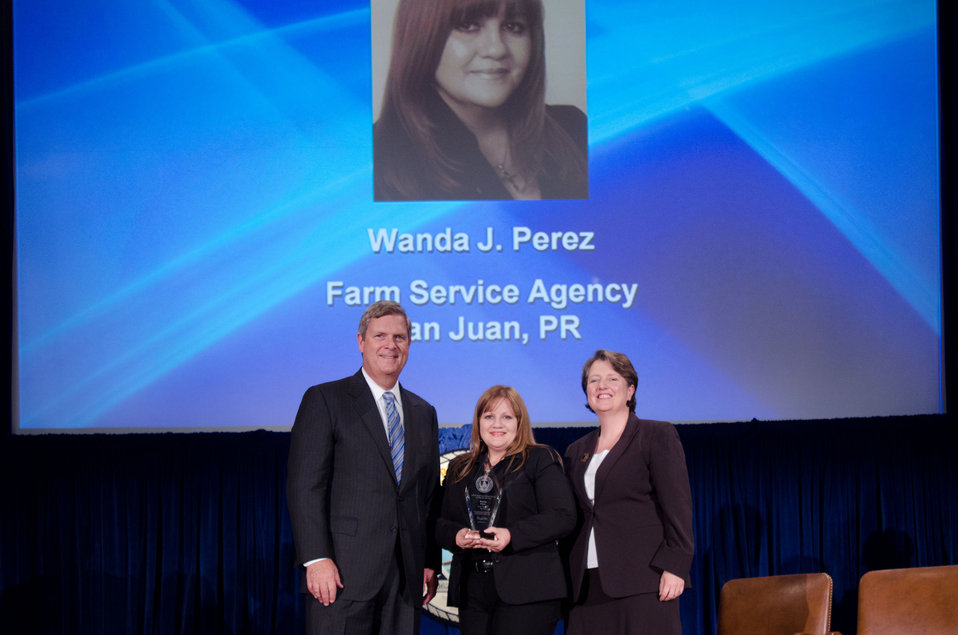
Agriculture Secretary Tom Vilsack (l) and Deputy Secretary Kathleen Merrigan (r), presents the Award for Personal and Professional Excellence to Wanda J. Perez, Farm Service Agency, San Juan, PR. For your personal, professional and outstanding contributions to USDA Farm Service Agency’s internal/external customers and the Agricultural Community in Puerto Rico. On Wednesday, September 14, 2011 in the Jefferson Auditorium at the US Department of Agriculture in Washington, DC.